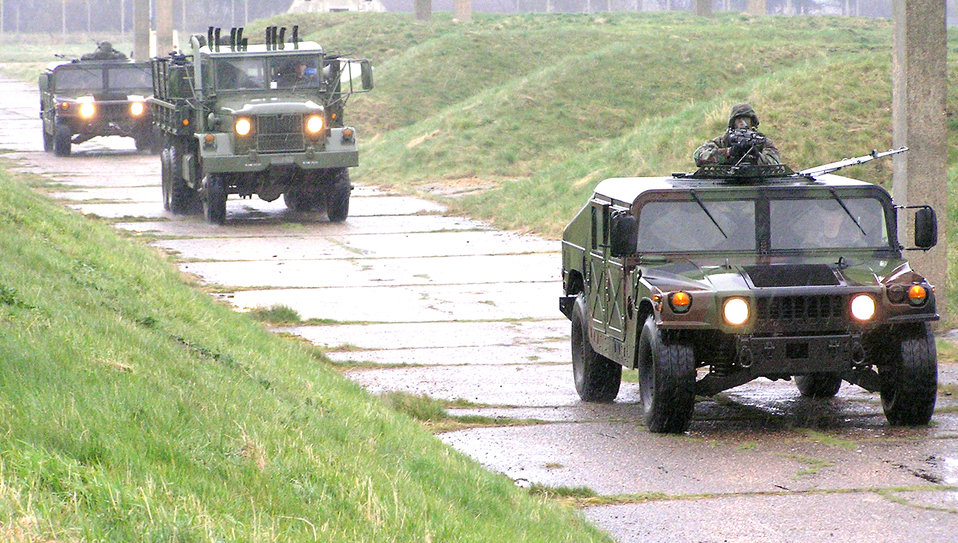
Mildenhall security forces receive realistic deployment training

ROYAL AIR FORCE MILDENHALL, England -- Airmen with the 100th Security Forces Squadron form a convoy configuration during combat readiness force training. They patrolled the area several times before responding to an attack by the